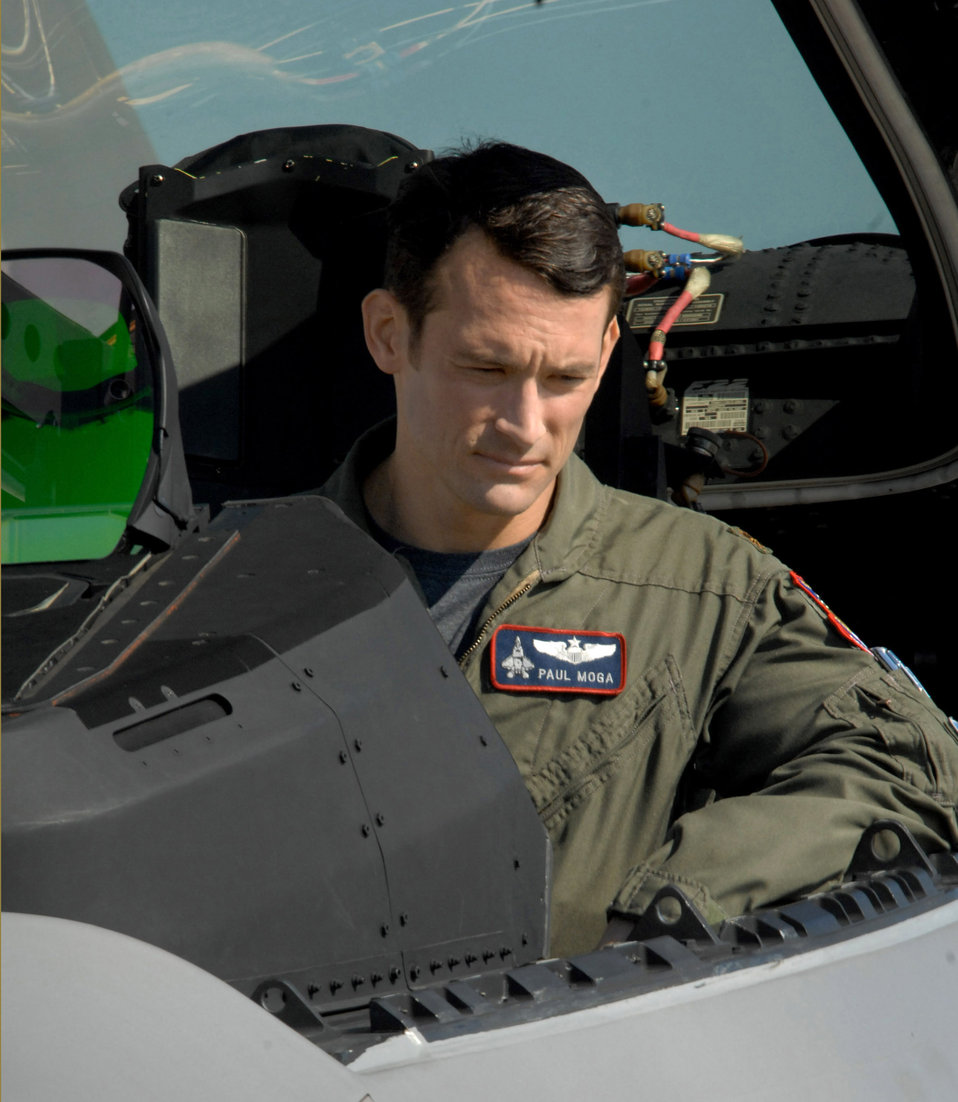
Discovery Channel

Maj. Paul Moga hosts an episode from the series